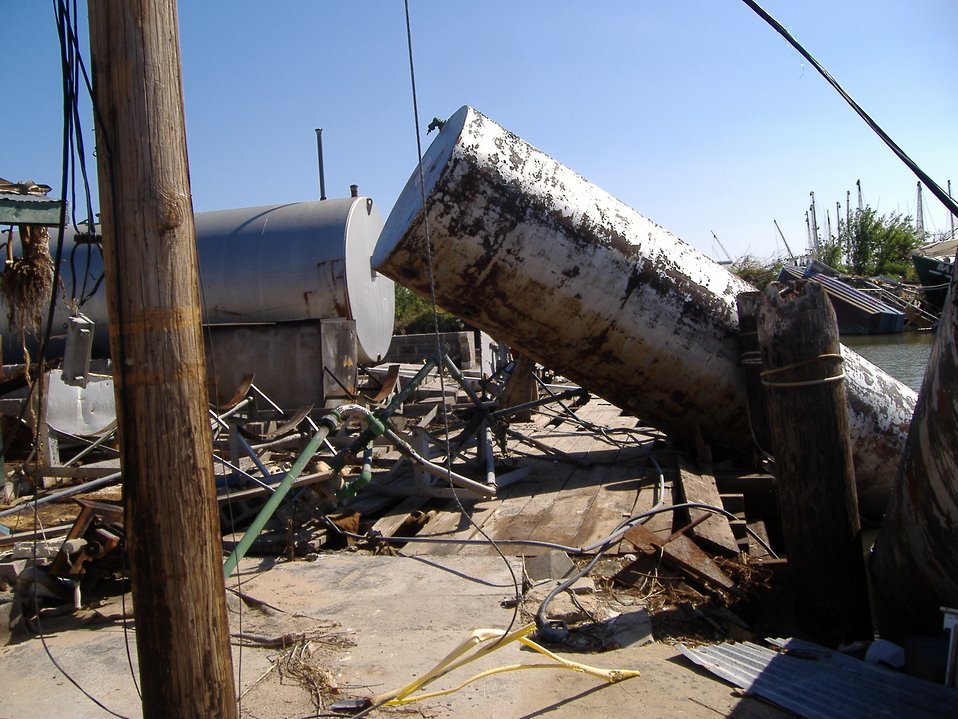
The aftermath of Katrina.